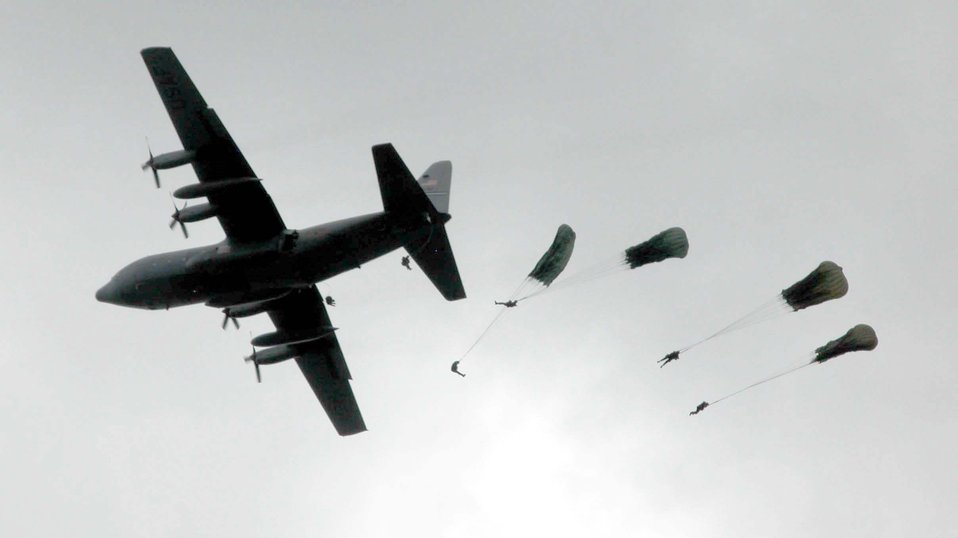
Paying tribute to airborne heroes

SAINTE-MERE-EGLISE, France -- Paratroopers jump from a C-130 Hercules on June 5 during a tribute to airborne Soldiers who died in the liberation of France in 1944.